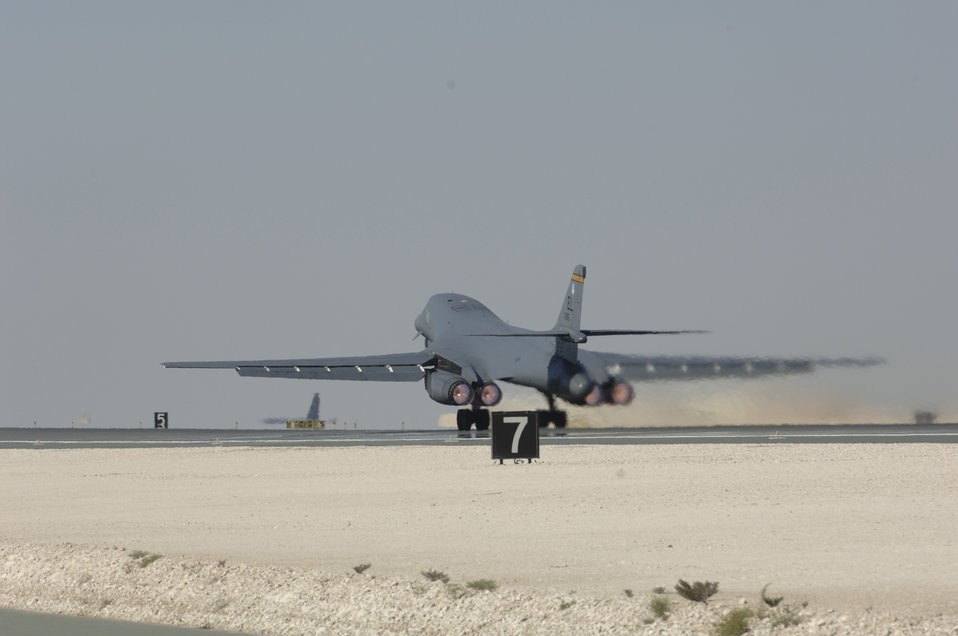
379th responds to increased operations

A 34th Expeditionary Bomb Squadron B-1B Lancer departs on a mission Feb. 15. The squadron is involved in a show of presence in Iraq as part of an intensified effort to complement Baghdad security plan operations.